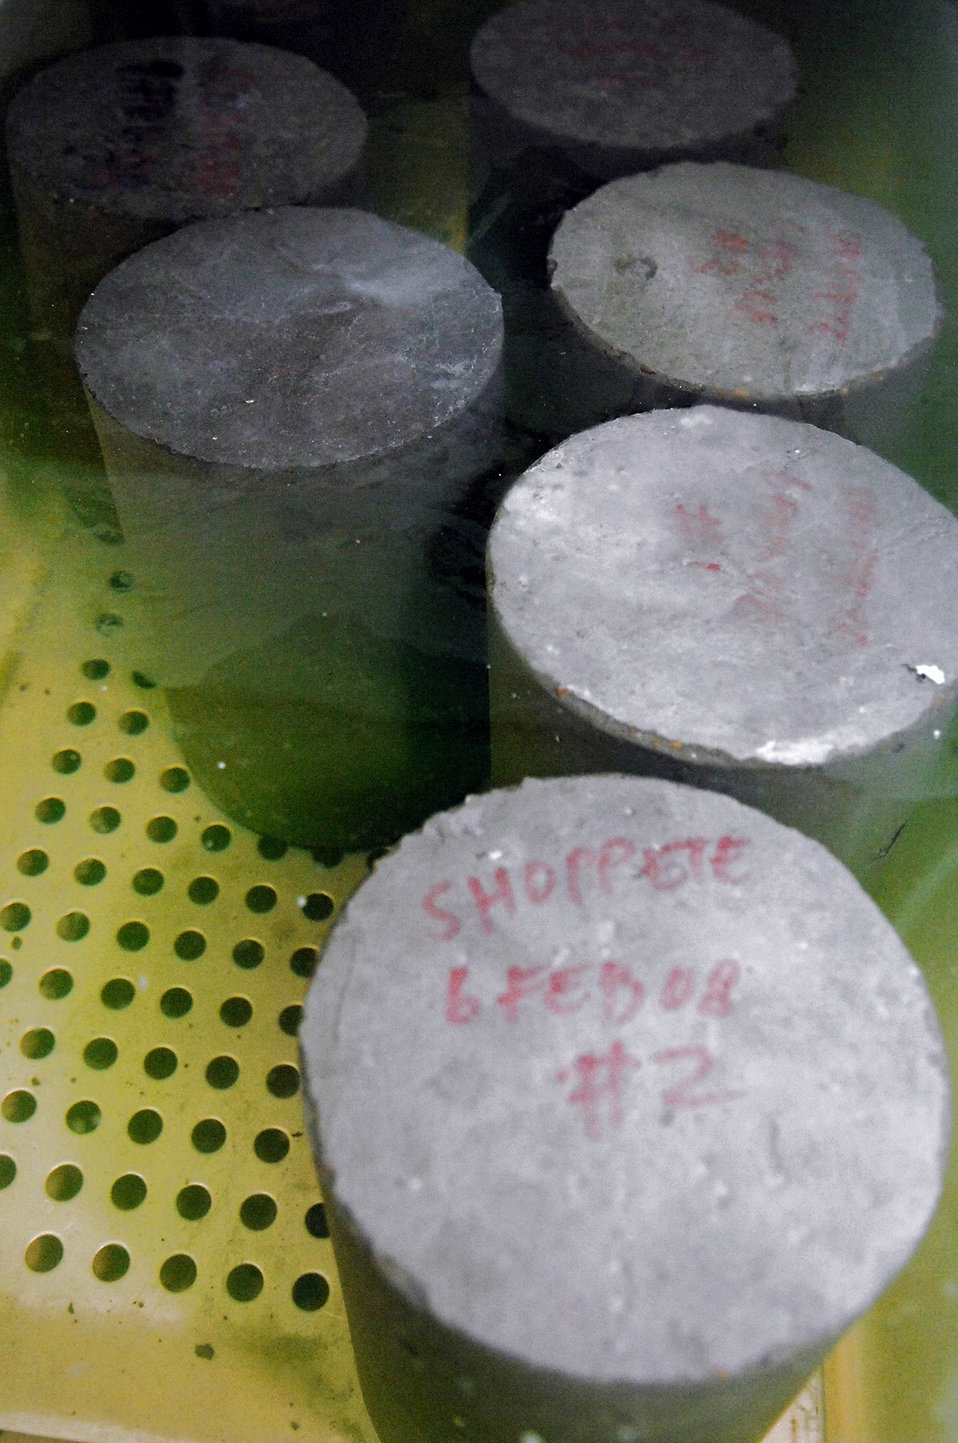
Under pressure

Twenty-pound concrete cylinder samples are taken from various construction locations around base are tested to ensure the concrete can withstand the pressure of 6,000 pounds per square inch for flightline uses and 4,500 psi for building foundations Feb. 21 at Balad Air Base, Iraq. These tests confirm aircraft or buildings can be put on concrete surfaces without the concrete cracking or sinking. The cylinders are cured for 24 hours and then placed in a water bath for seven days before putting them though a strength test machine. On Feb. 21, a sample from the new Housing 6 area shoppette was tested and passed the strength test.